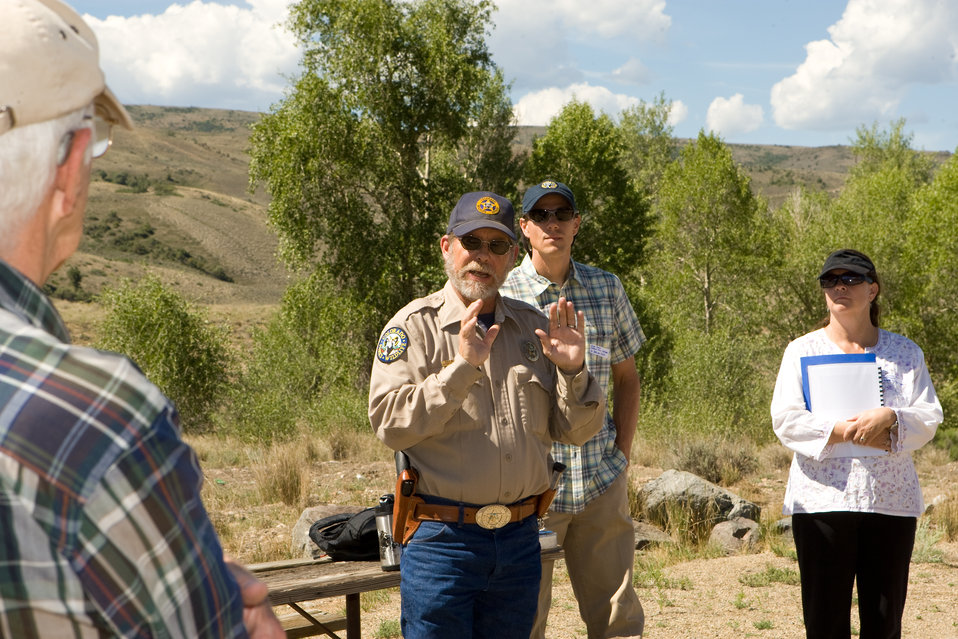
Colorado Rare Plant Conservation Initiative

The Colorado Rare Plant Conservation Initiative (RPCI) is a partnership of 23 statewide and regional agencies, private organizations, and academic institutions working to conserve 121 rare plants in Colorado. As part of these efforts the group developed the Colorado Rare Plant Conservation Strategy, developed Best Management Practices to reduce energy development impacts, addressed climate change, and developed focused strategies for the conservation of individual species at eight priority landscapes. The group has also worked to coordinate volunteer efforts for plant conservation across the state.